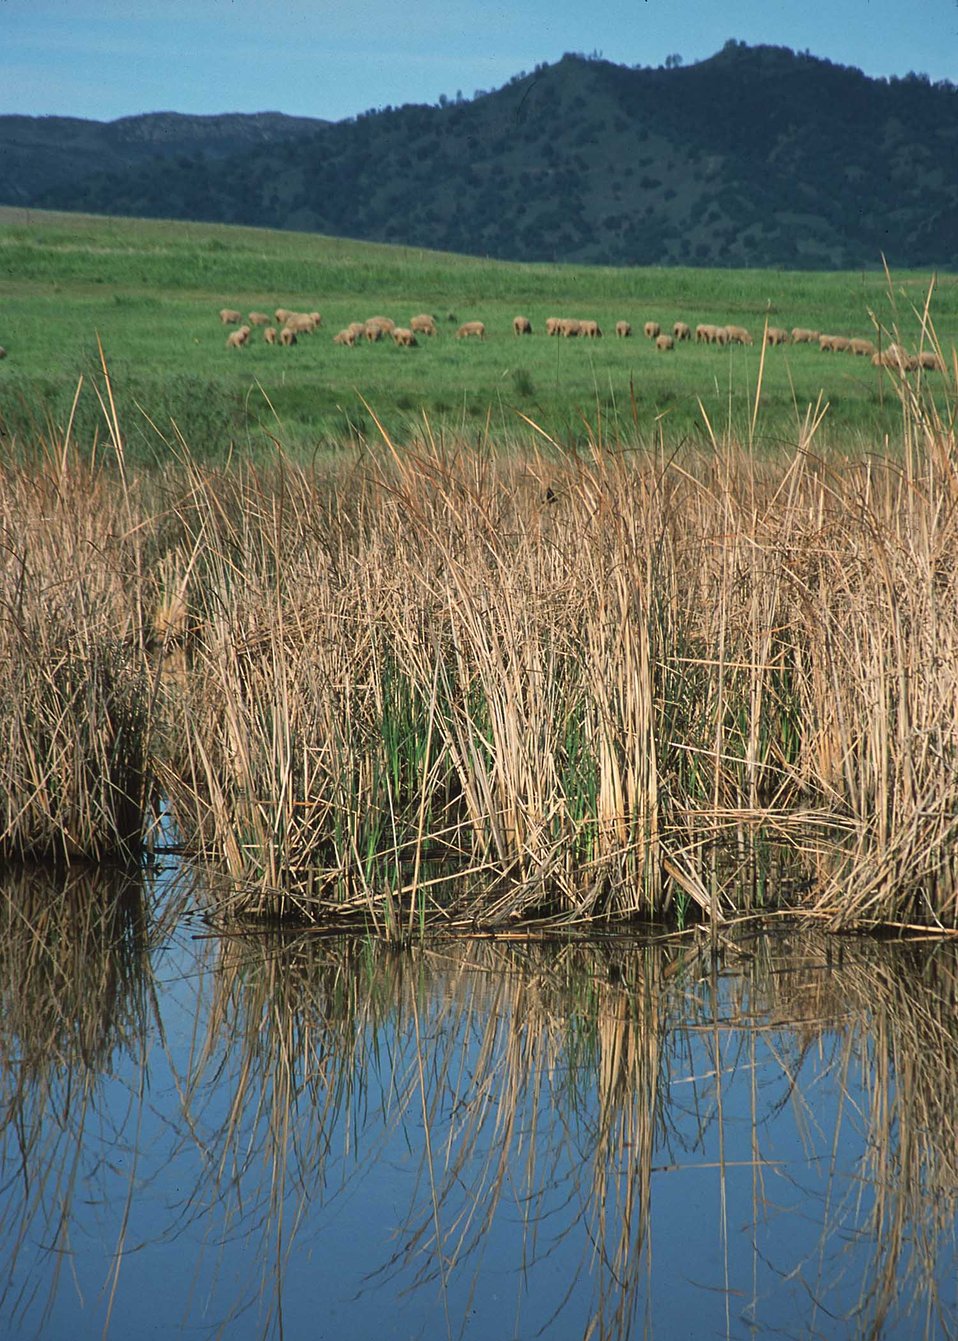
Sheep graze in pasture in background. Restored wetland in foreground.